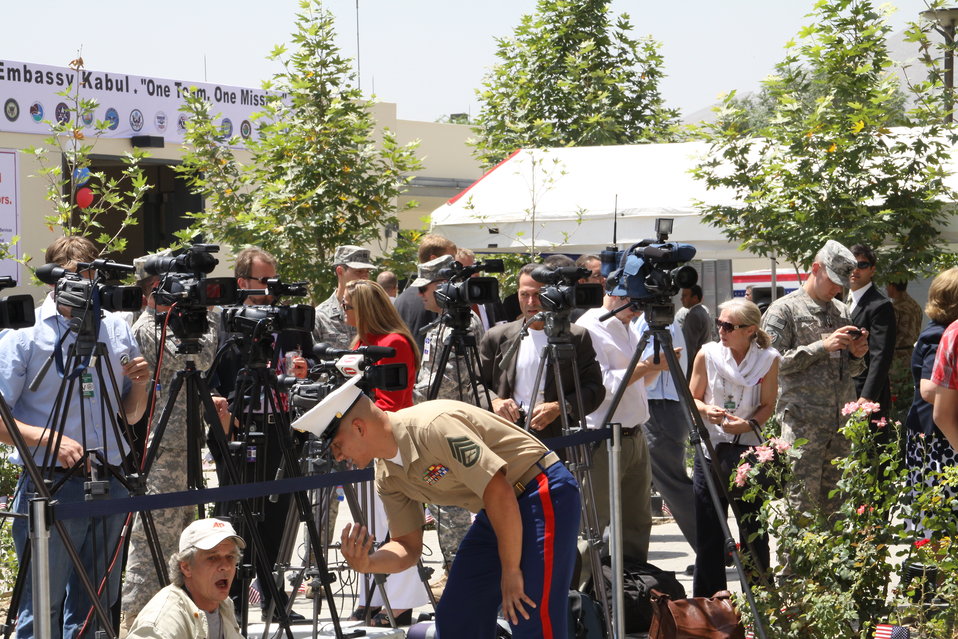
Kabul Official July 4th Celebration